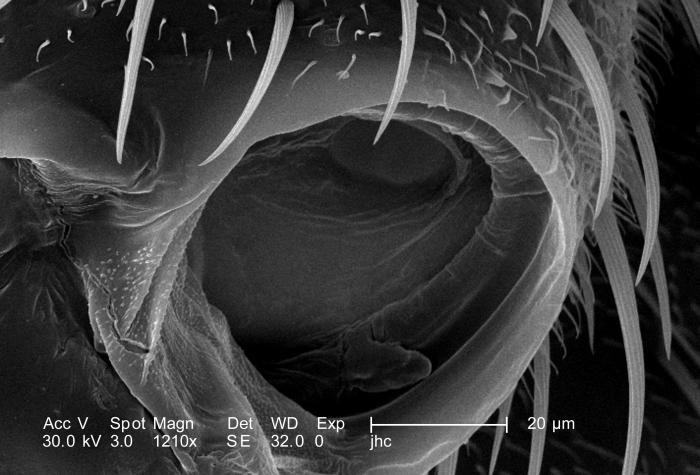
Magnified 1210X, which is twice the magnification of PHIL 9912, this scanning electron micrograph (SEM) depicted some of the morphologic details found at one of the leg joints of what was an unidentified 1/4"-sized black flying insect with a small red mark on its dorsum, discovered in the suburbs of Decatur, Georgia. As a member of the Phylum Arthropoda, i.e., Arthro = 'jointed', and poda 'leg', this insect sported three pairs of jointed legs, which placed it into the Family, Insecta>. Note that PHIL 9912, 9914 and 9915 depict this region under varying magnifications.